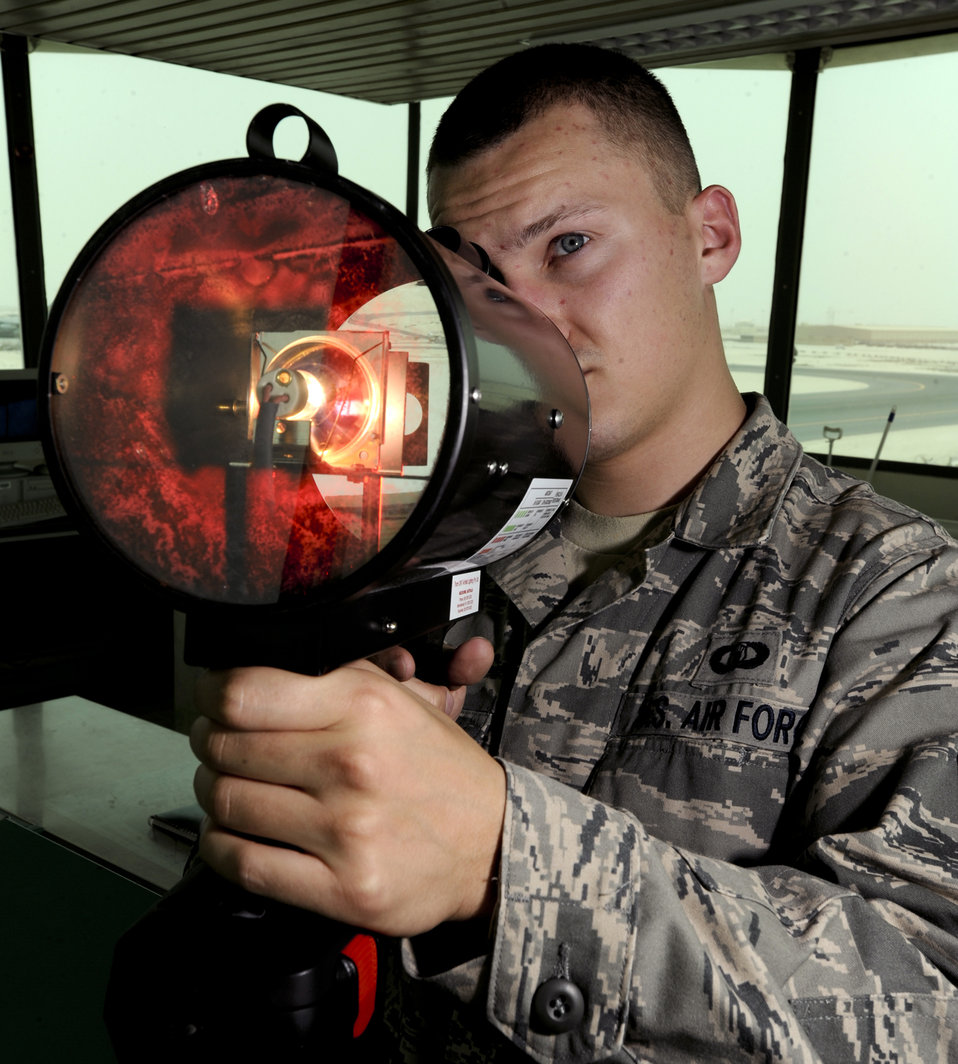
Testing one, two, three

Senior Airman Stephen Boniol demonstrates how to operate a control tower light signaling gun May 18 at an air base in Southwest Asia. The light gun is used to communicate with either aircraft or ground vehicles during communications failures. Airman Boniol is an air traffic controller with the 379th Expeditionary Operations Squadron.